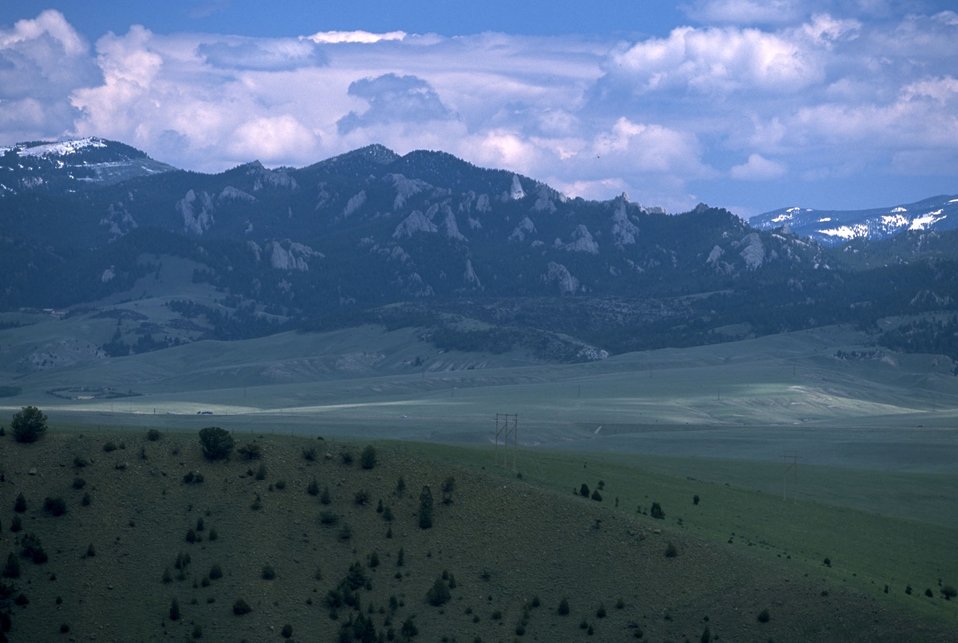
Humbug Spires area